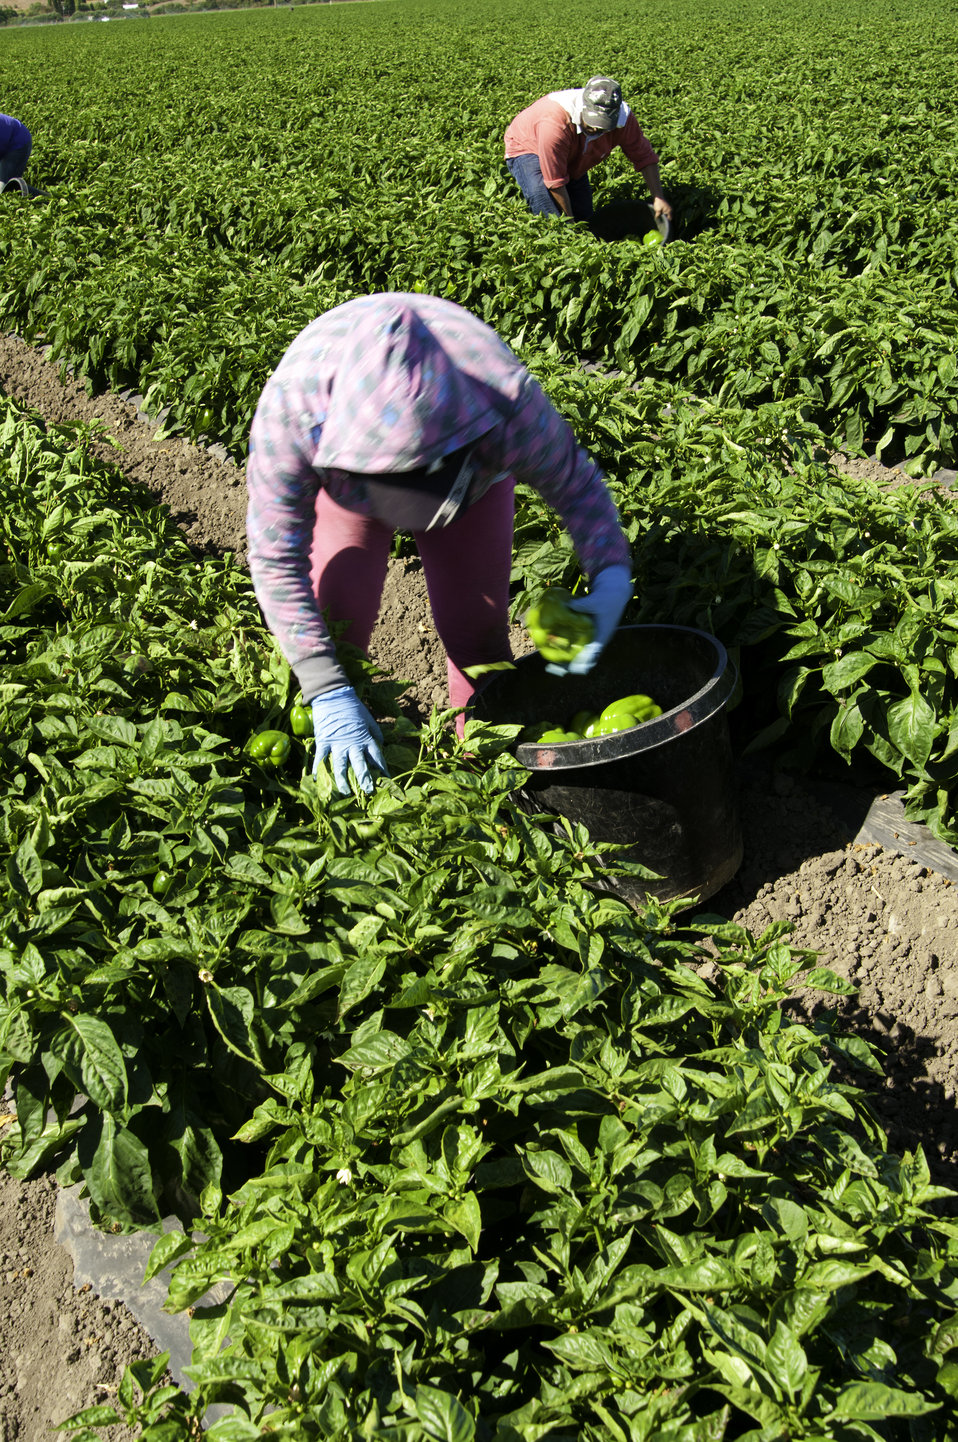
Migrant workers harvest green peppers on Uesugi Farms in Gilroy, CA on Wednesday, Aug. 28, 2013.